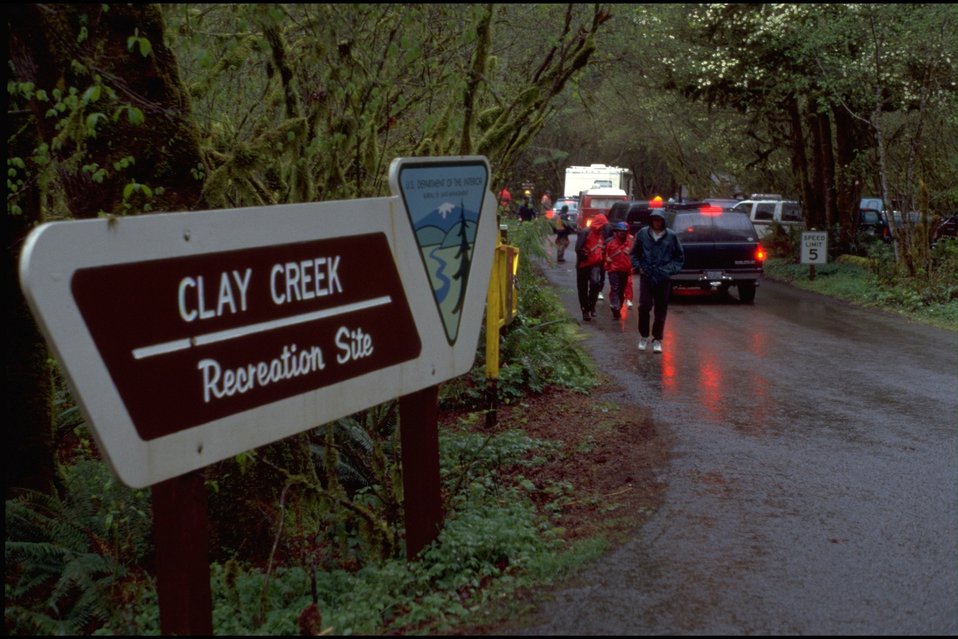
Tour of Willamette.